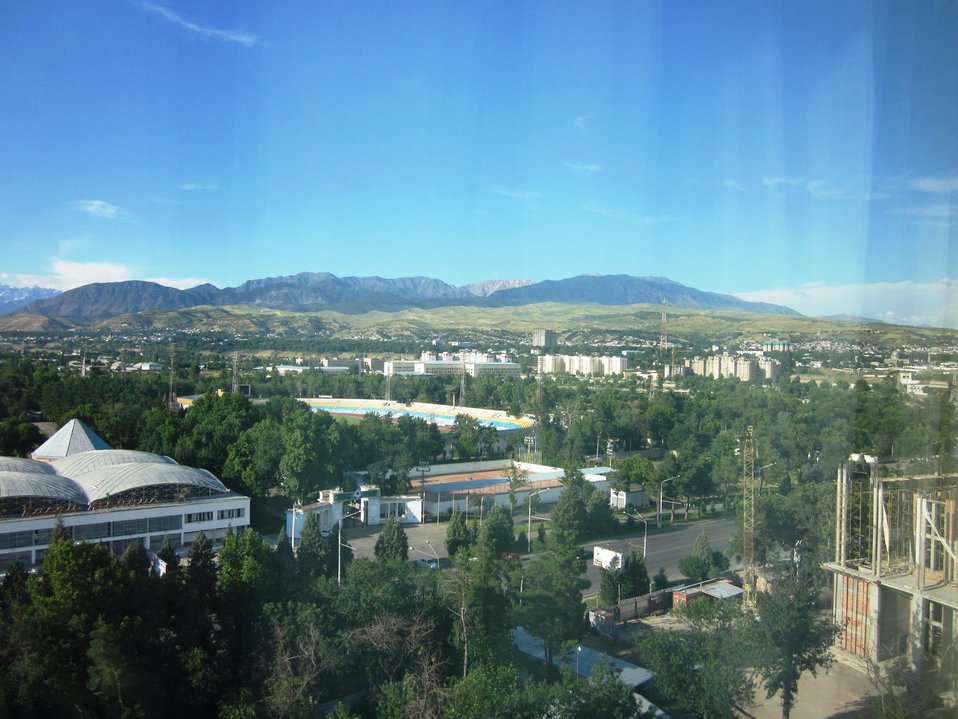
The Dushanbe Landscape From the Dushanbe Hyatt Hotel

A photo is taken of the landscape from the Dushanbe Hyatt Hotel in Dushanbe, Tajikistan, on June 6, 2010.